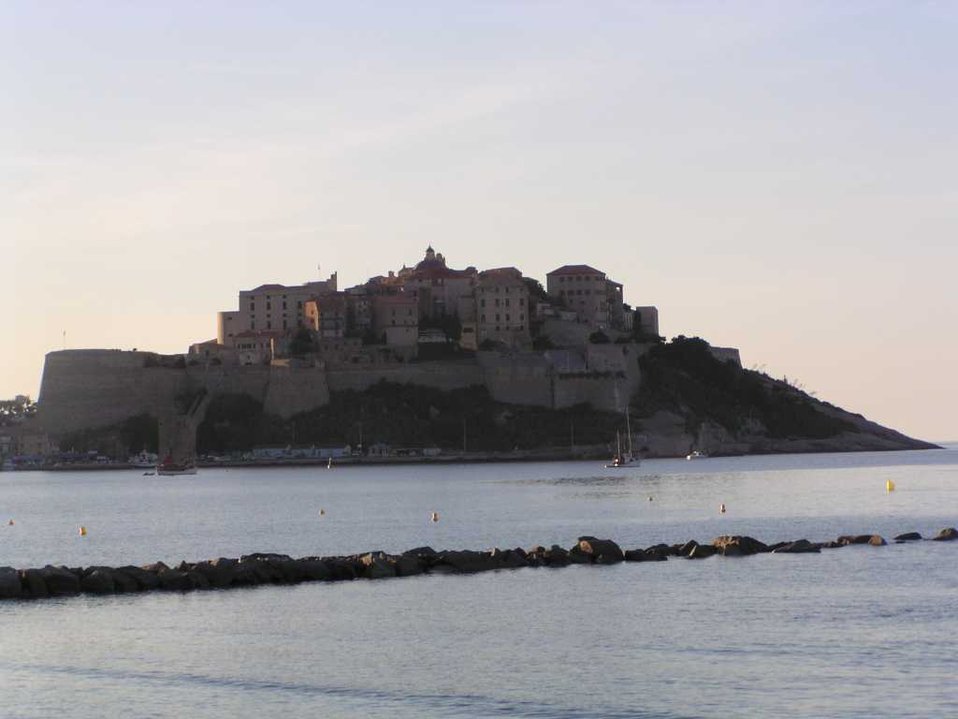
Deutsch: Zitadelle von Calvi